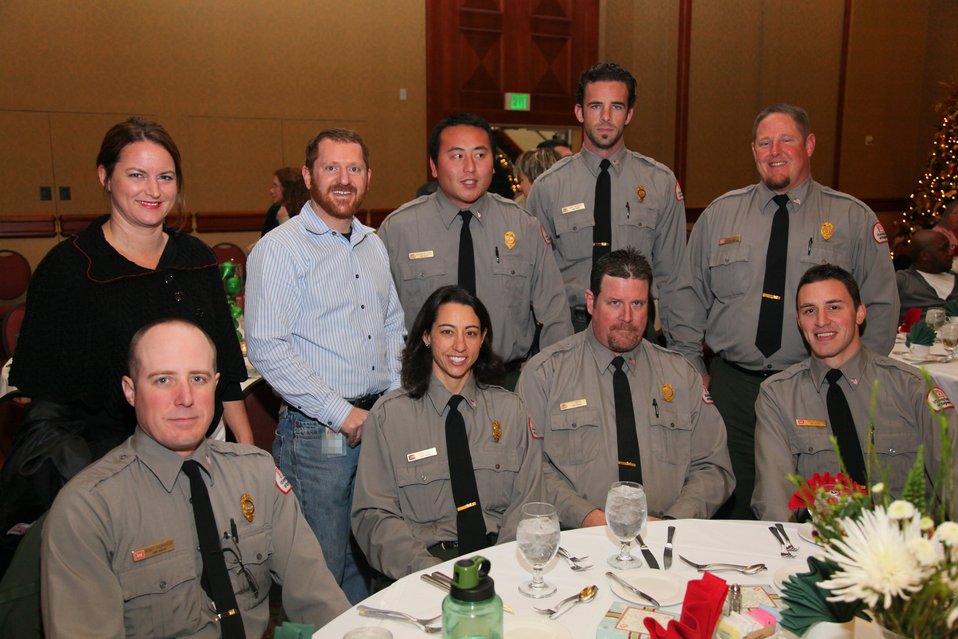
Sacramento District Holiday Party 2011